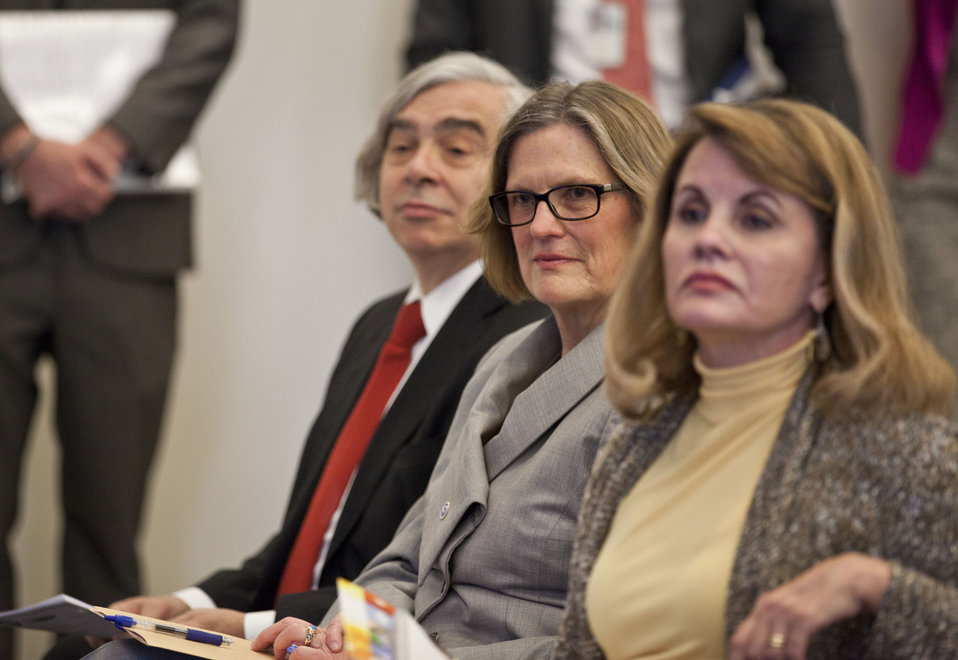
White House Leadership Summit on Women, Climate and Energy